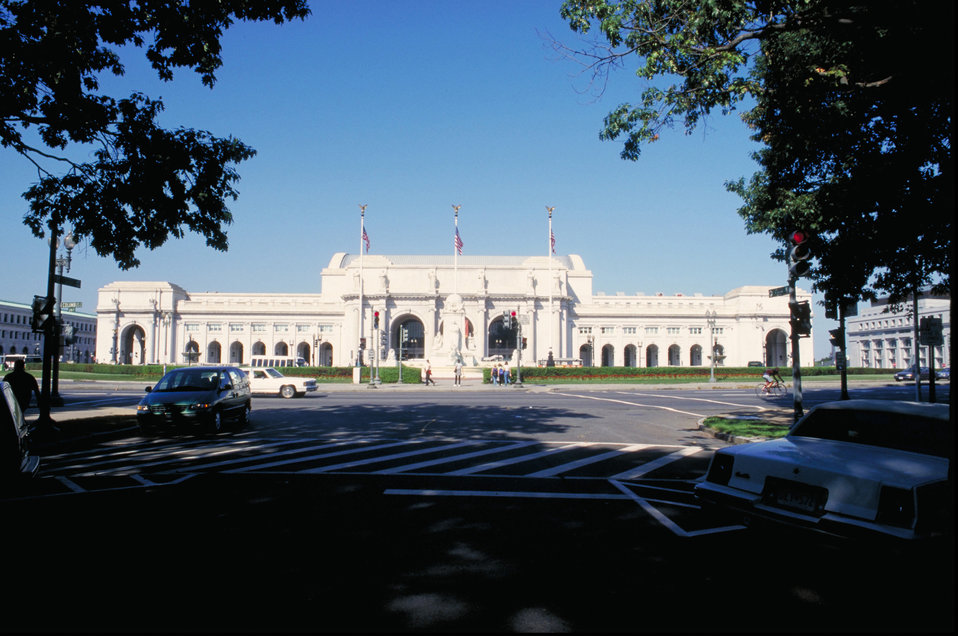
Union Station in Washington, DC.